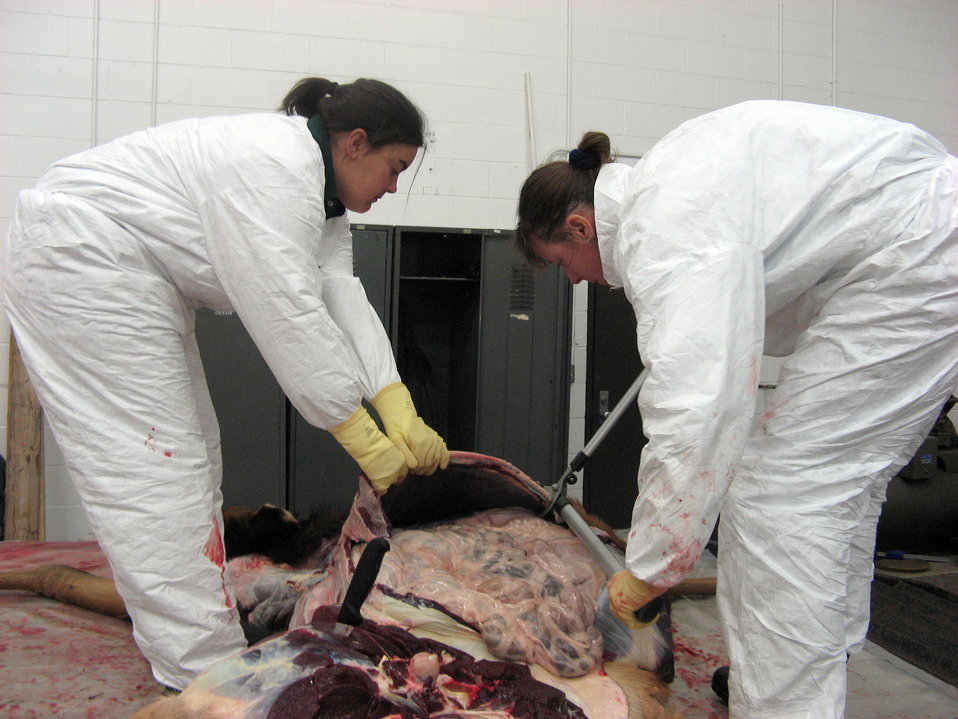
Elk Necropsy

Lee Jones and Diane Borgreen conduct a necropsy (autoposy on an animal), on an elk at Sully's Hill National Game Preserve. Necropsy of animals that die is important in learning what disease or health issues may be affecting refuge wildlife populations.